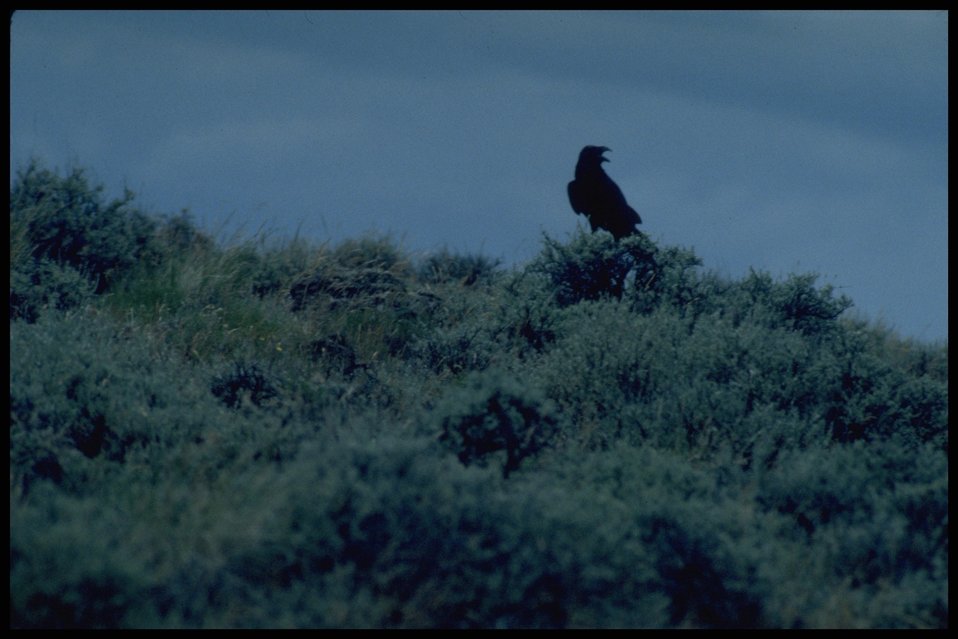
Far shot of Raven, Lakeview District.